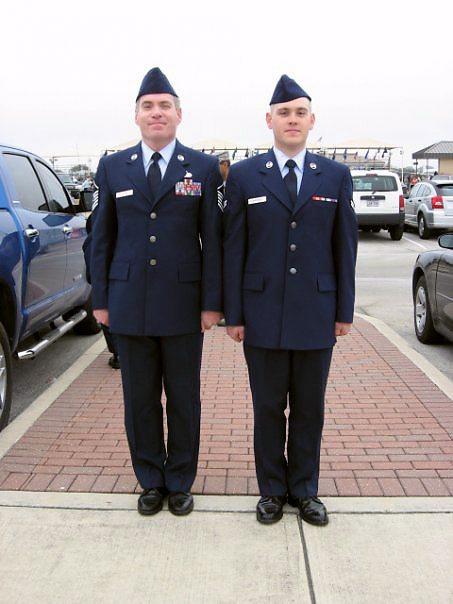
Airman's road to success began with weight-loss journey

Retired Master Sgt. Tim Childers (left) and his son, Airman 1st Class Steven Childers, stand next to each other after Airman Childers graduated from Basic Military Training at Lackland Air Force Base, Texas. Airman Childers shed 70 pounds to enlist in the Air Force in November. Airman Childers is a 338th Training Squadron electronic principles course student at Keesler AFB, Miss.